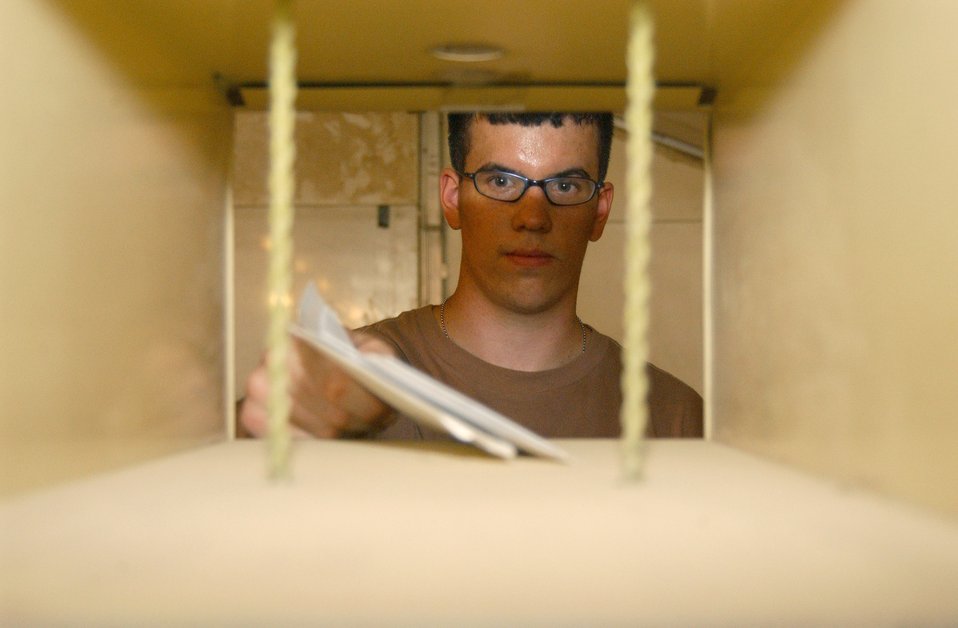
Deployed postal workers help build morale

BALAD AIR BASE, Iraq -- Airman Ryan Goldberg puts mail away at the postal facility. He is one of three full-time postal employees here. Airman Goldberg is a postal augmentee with the 332nd Expeditionary Communications Squadron and is from Eglin Air Force Base, Fla.